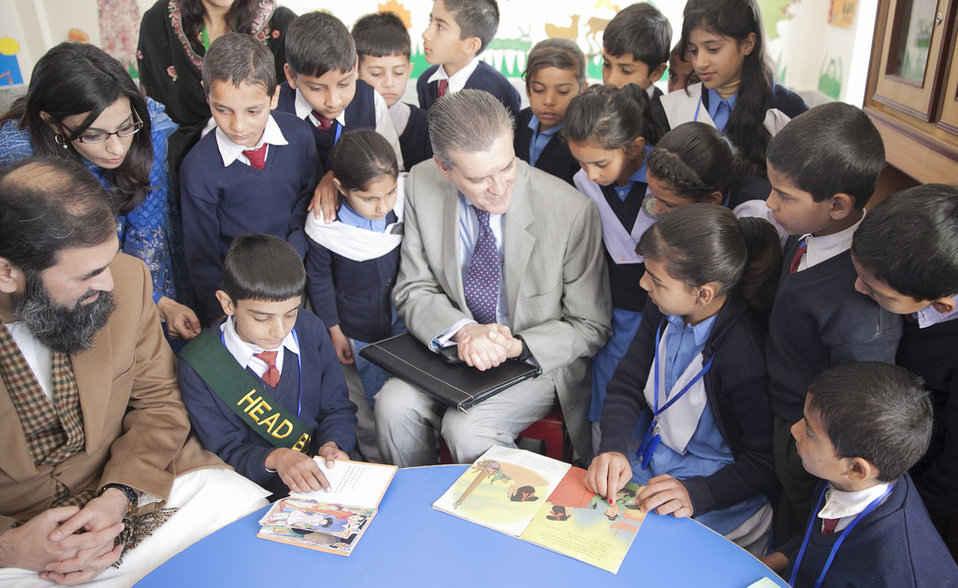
United States and Pakistan Launch the Pakistan Reading Project